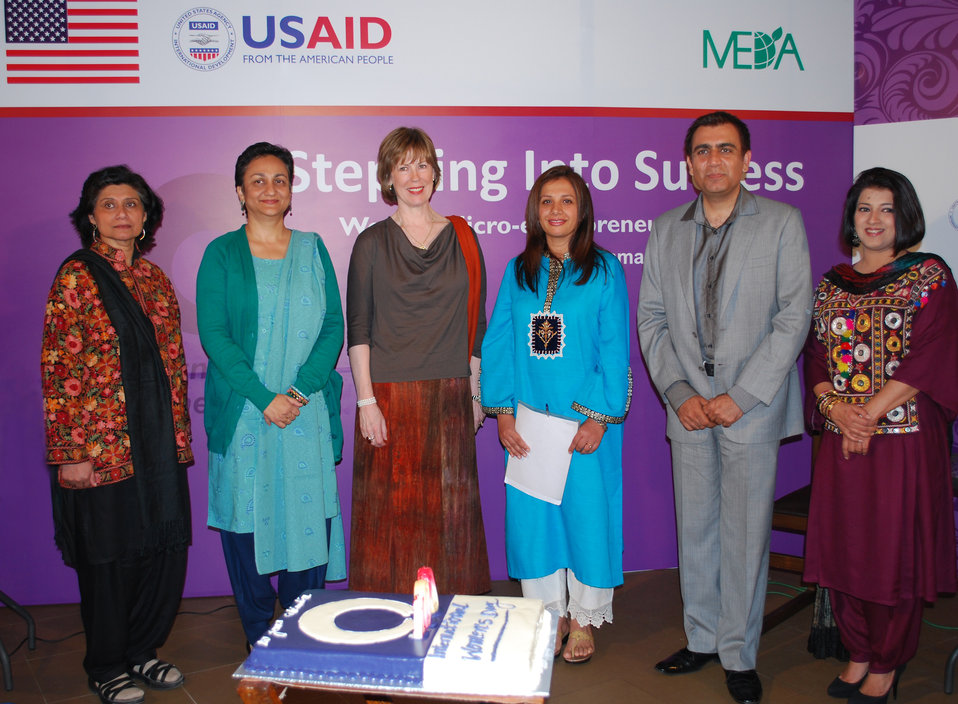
100th Anniversary of International Women’s Day

Islamabad, March 8, 2011 - Dr. Marilyn Wyatt, wife of the U.S. Ambassador to Pakistan at the celebration of the 100th anniversary of International Women’s day in Islamabad. U.S. Agency for International Development (USAID) held a panel discussion on the economic progress of women in Pakistan.